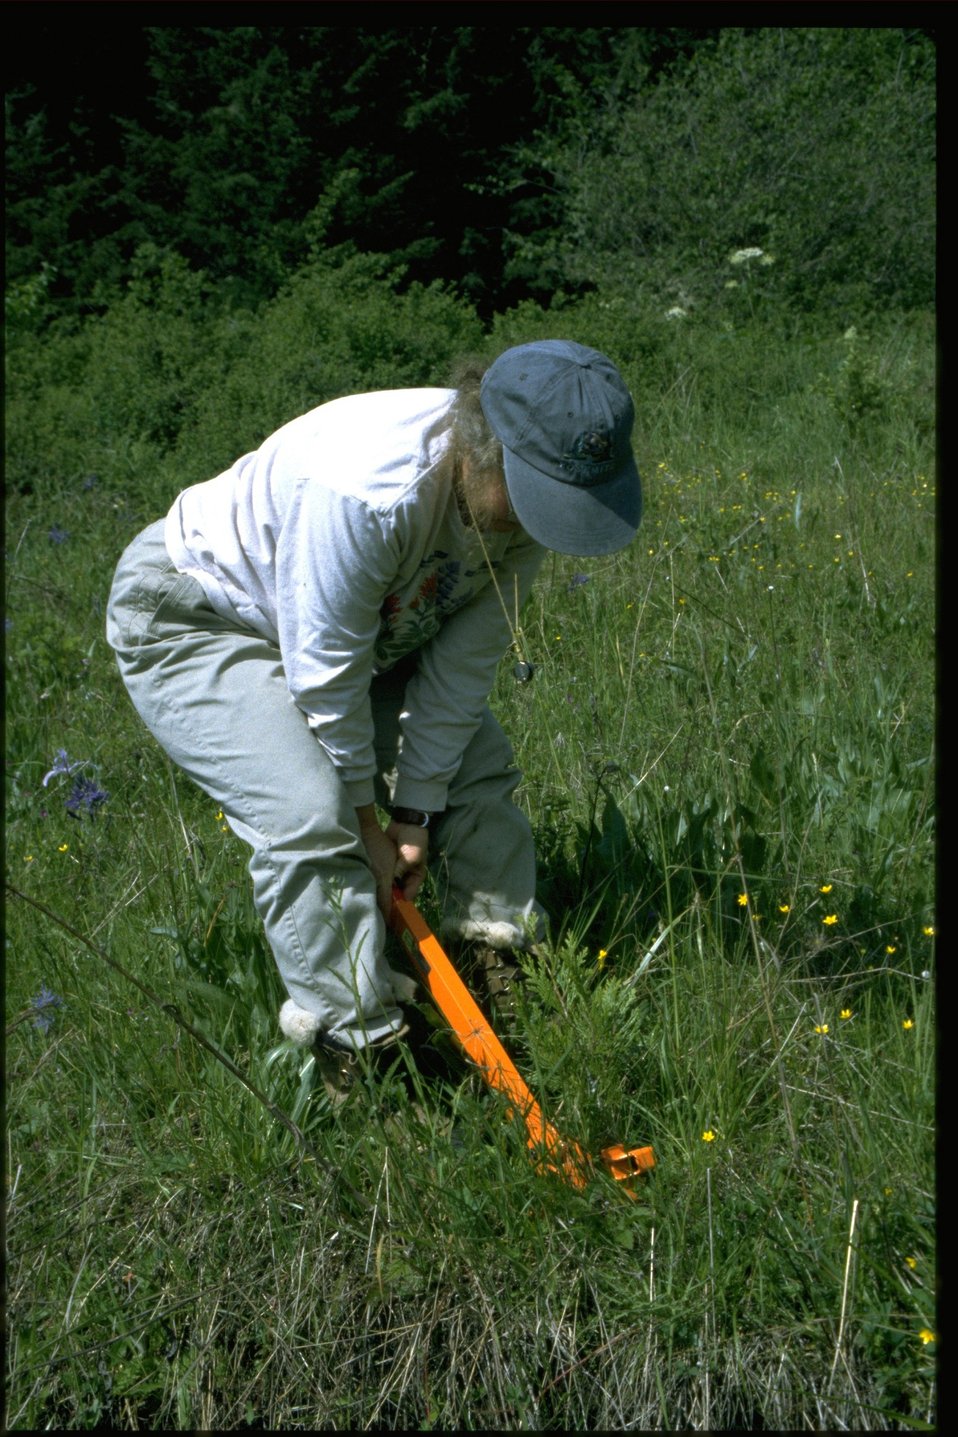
Cheshire Mayrsohn, Botanist in the McKenzie Resource Area, Eugene District.